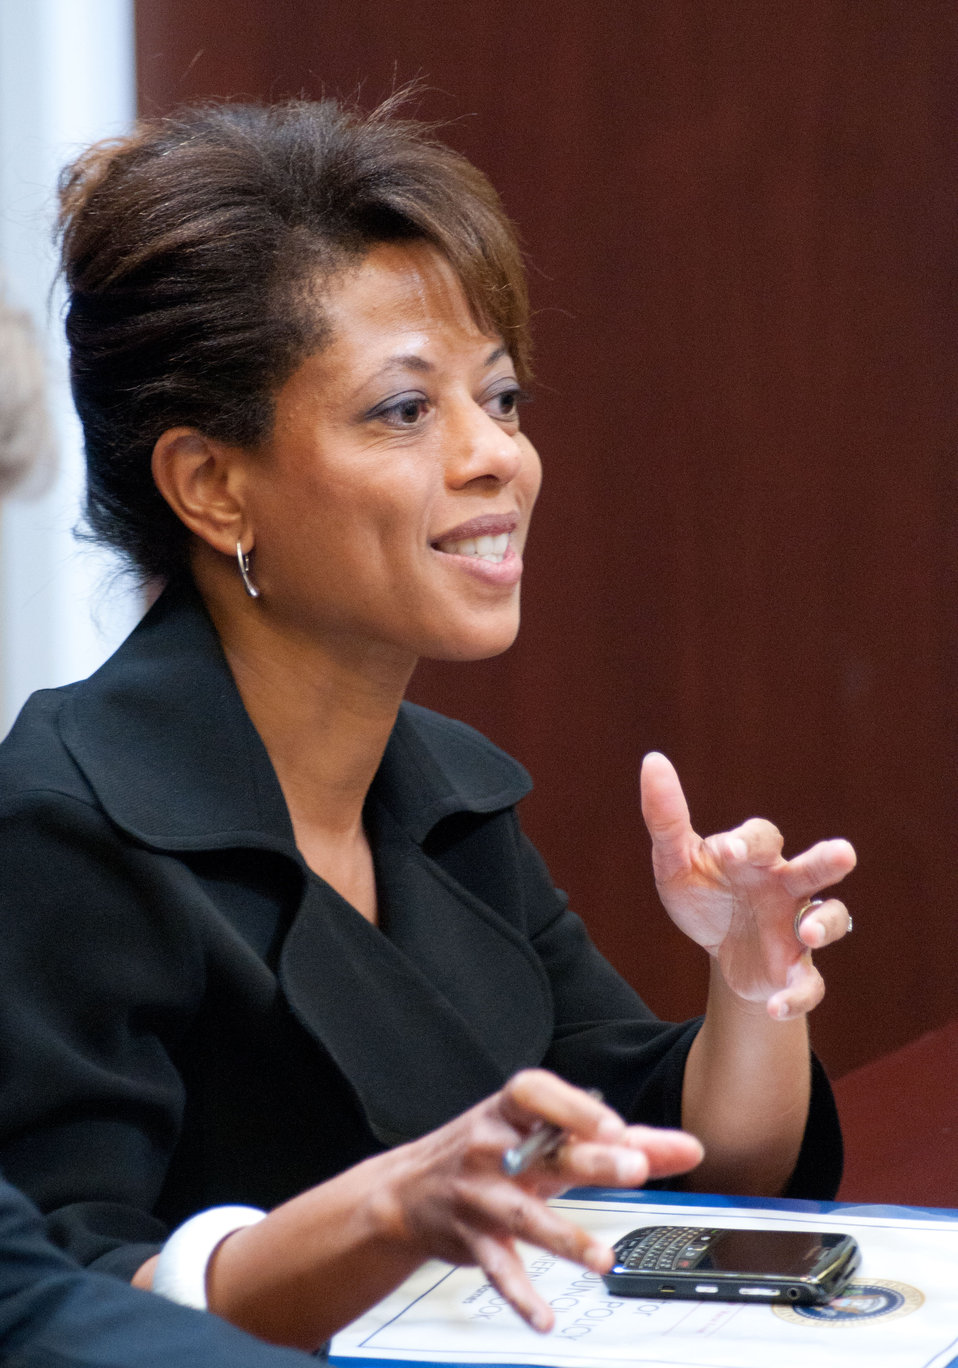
President Obama’s Domestic Policy Adviser Melody Barnes makes remarks at the White House Rural Champions for Change meeting at the White House, in Washington, DC, on July 6, 2011. President Barack Obama, Agriculture Secretary Tom Vilsack, and Melody Barnes along with rural communities leaders from across the country came together for the event whose aim is to strengthen rural communities and promote economic growth. Prior to coming here, they were posed with a question about, what should/should not the government be doing to strengthen rural communities and promote economic growth.